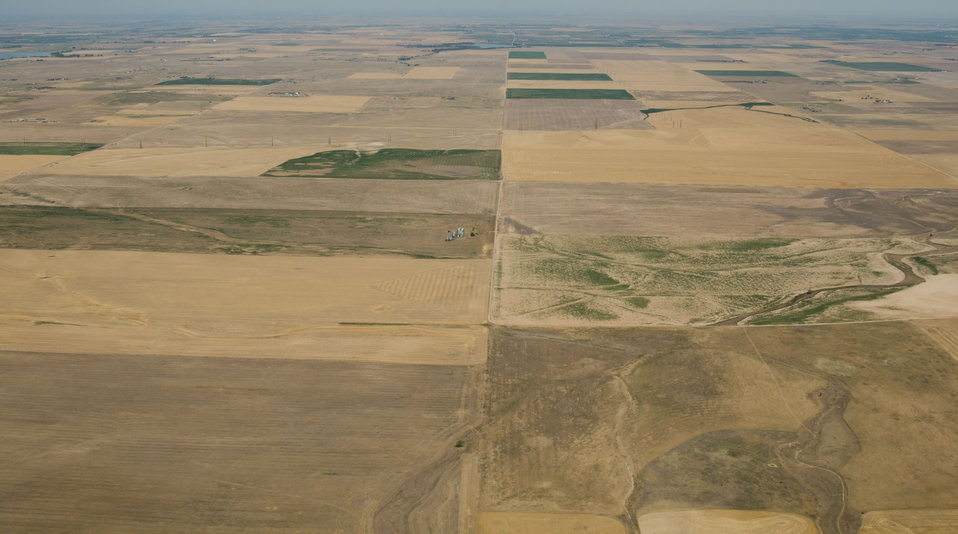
Aerial views of drought affected Colorado farm lands, 71 miles east of Denver, Colorado on Saturday, July 21, 2012.